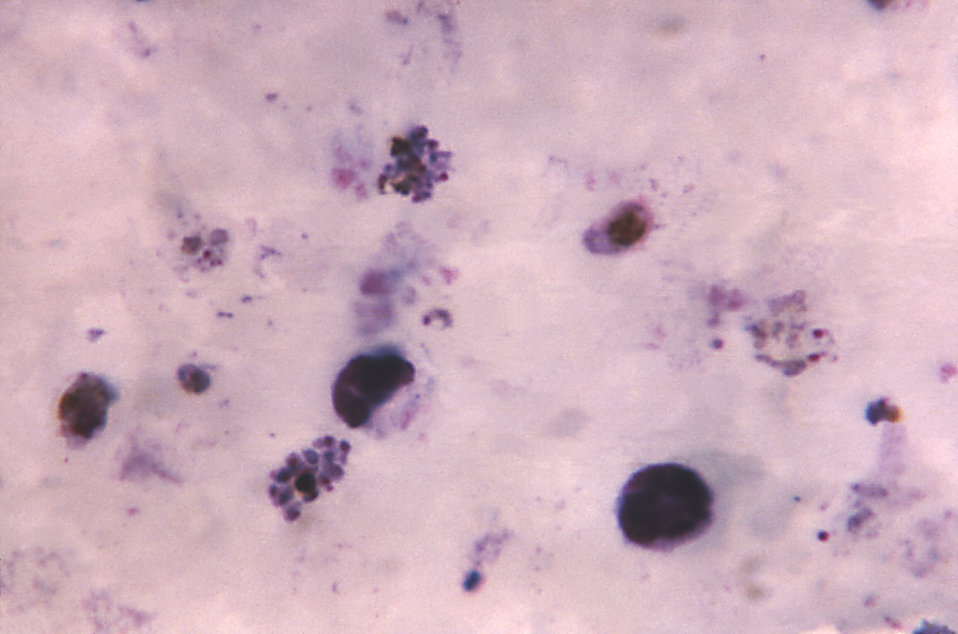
This thick film photomicrograph indicates the presence of a "mixed" Plasmodium spp. infection.